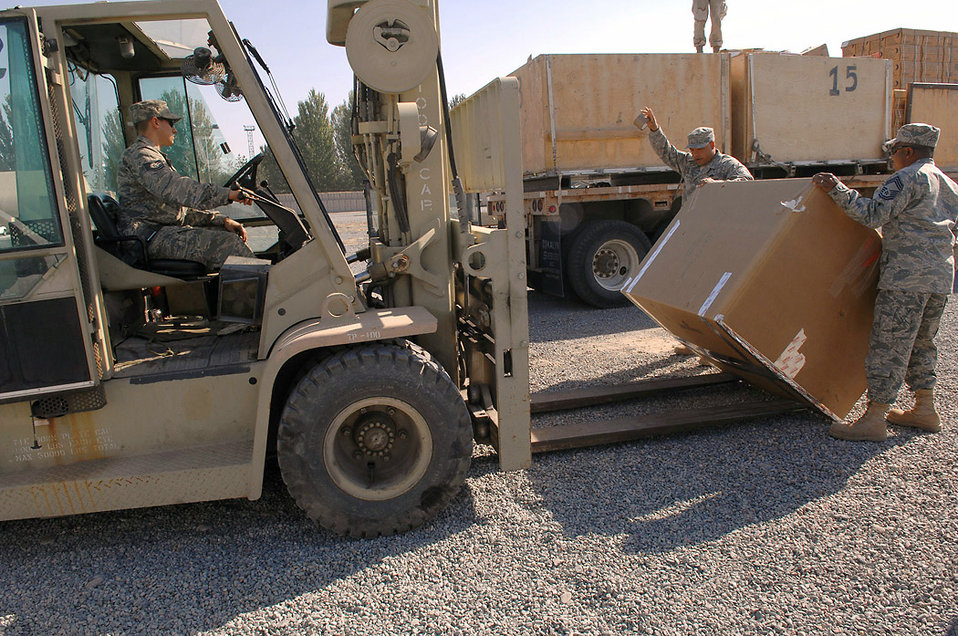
Manas Air Base provides aid to earthquake victims

Chief Master Sgt. Stanley Walker and Master Sgt. Otis West tip a box of cold weather gear as forklift driver, Tech. Sgt. Daryl Maniscalco, prepares to place it on a flatbed truck of humanitarian aid intended for survivors of an Oct. 5 earthquake in southern Kyrgyzstan. Airmen from Manas Air Base, Kyrgyzstan, sent thousands of pounds of aid, Oct. 8, that included pallets of food rations, bottled water, surplus military cold weather gear and more than 120 boxes containing 3,000 pounds of adult and children's winter clothing, blankets and toys. A call for personal donations resulted in more than 40 Airmen donating their own blankets they deployed here with. Chief Walker and Sergeant West are both with the 376th Expeditionary Logistics Squadron.